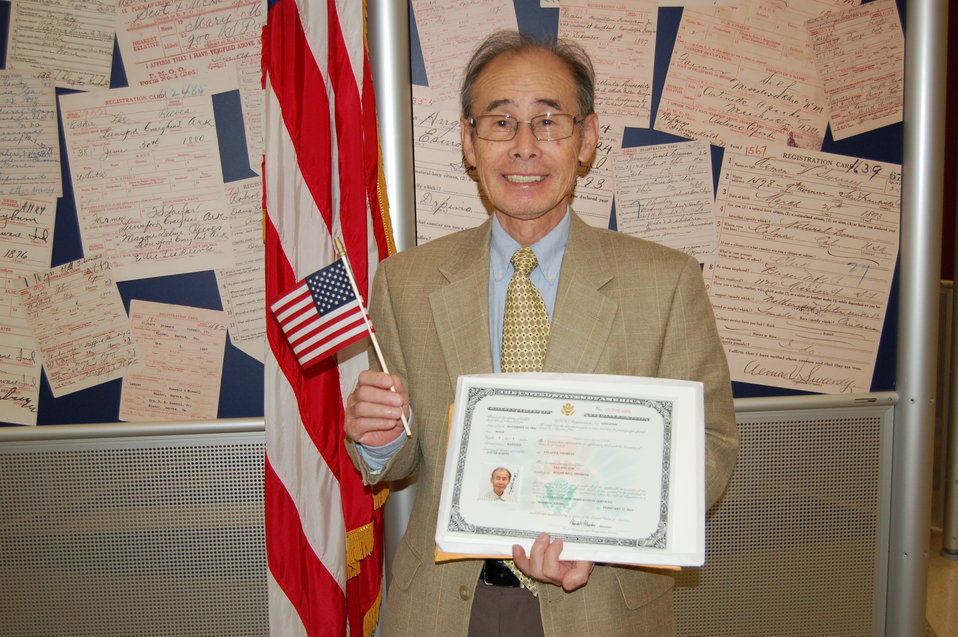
New Citizens